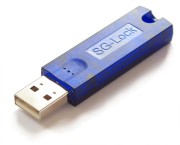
USB Dongle